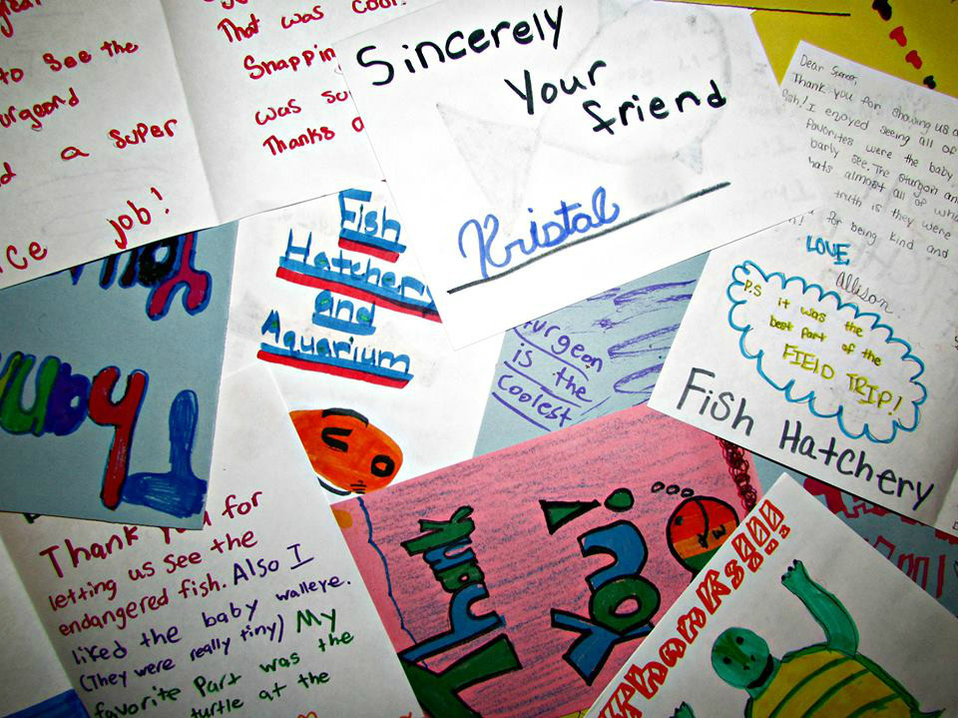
Rewarding

Getting 'thank yous' is one of our favorite parts of working at the hatchery. Seeing the fascination kids have with our work is special. Here is a group of letters we received from a Sioux Falls middle school after a tour in May.